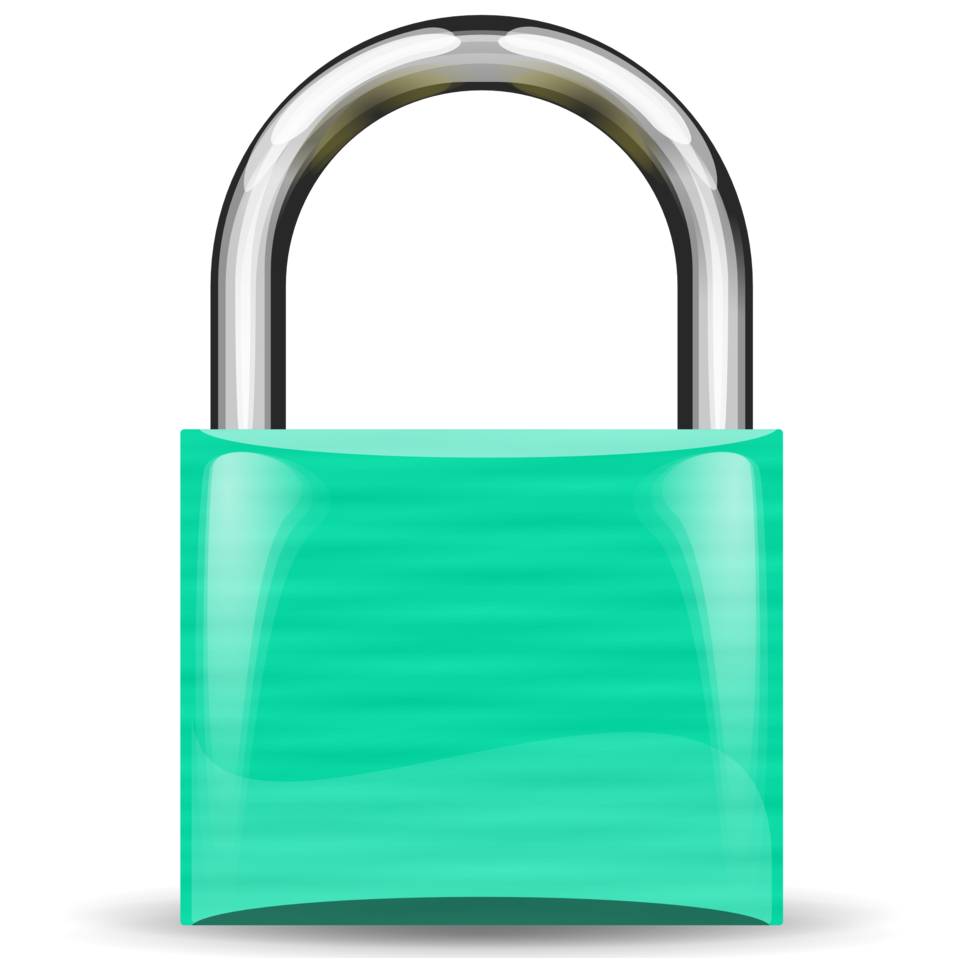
A Padlock that is mint